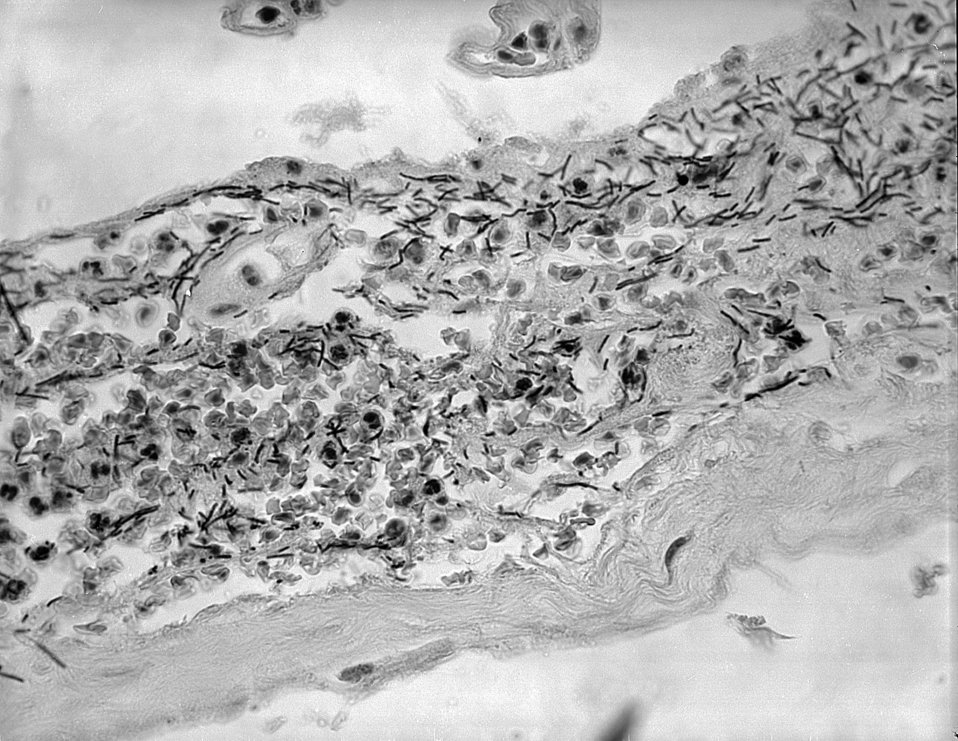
Bacillus anthracis in meninges.